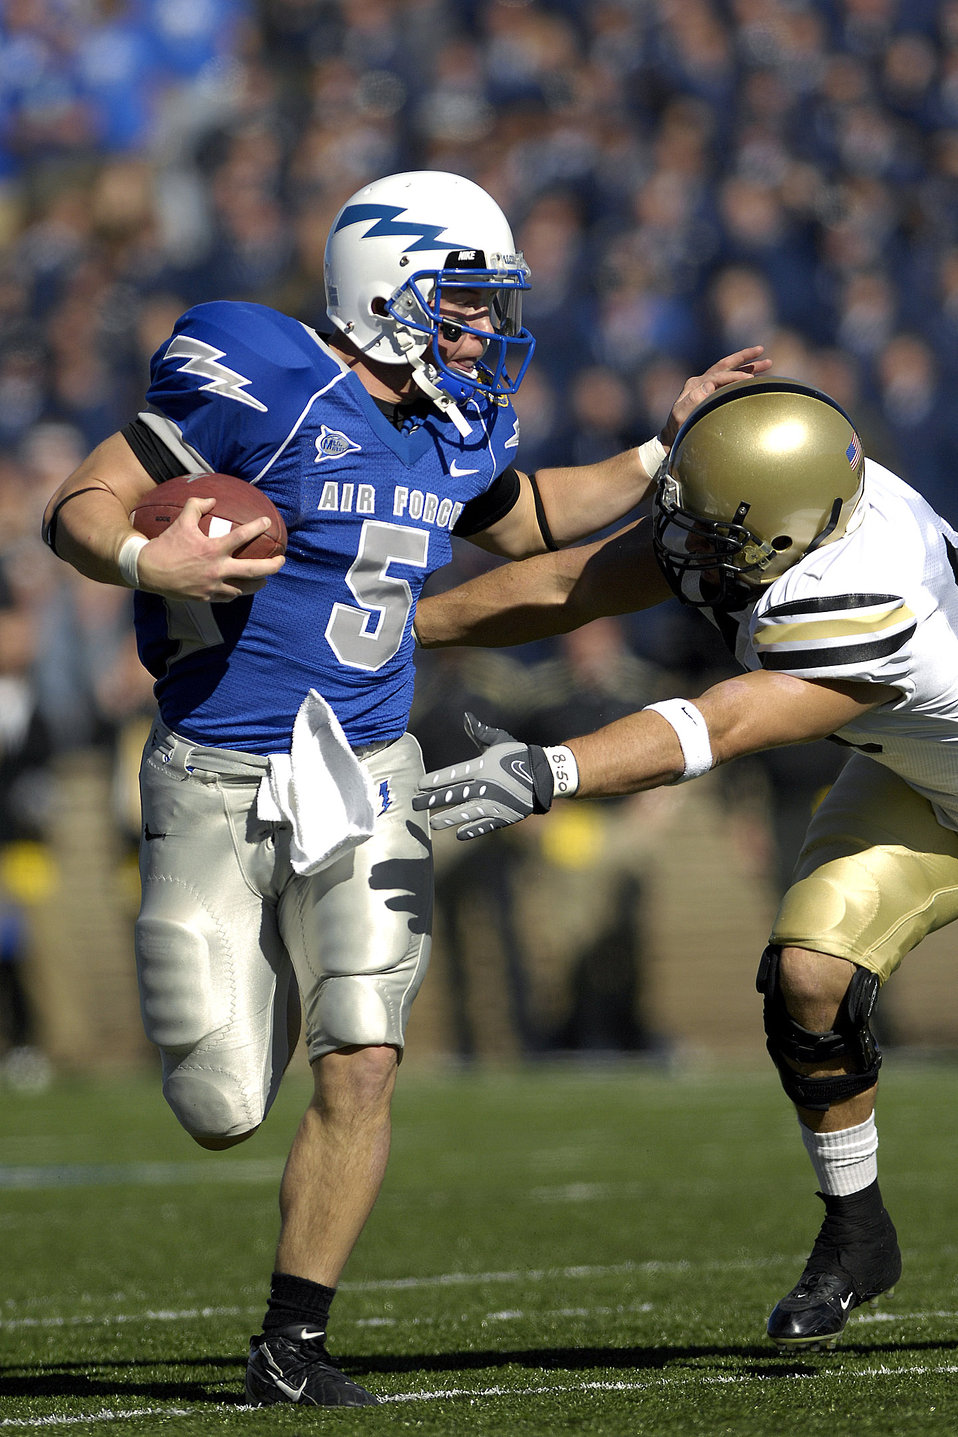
Football: Falcons ride record-breaker Hall over Army

Falcon quarterback Shaun Carney eludes an Army defender during Air Forces 30-10 win over the Black Knights Nov. 3 at Falcon Stadium in Colorado. Carney ran for 53 yards on eight carries while passing for 105 more, completing 9-of-12 passes.